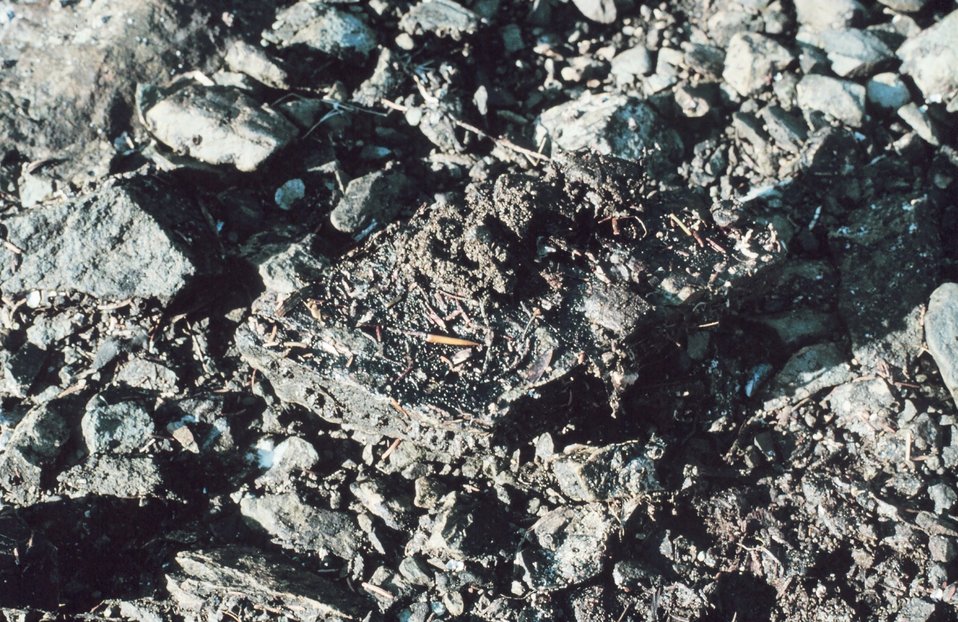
Oil scum one year after the spill on Prince William Sound